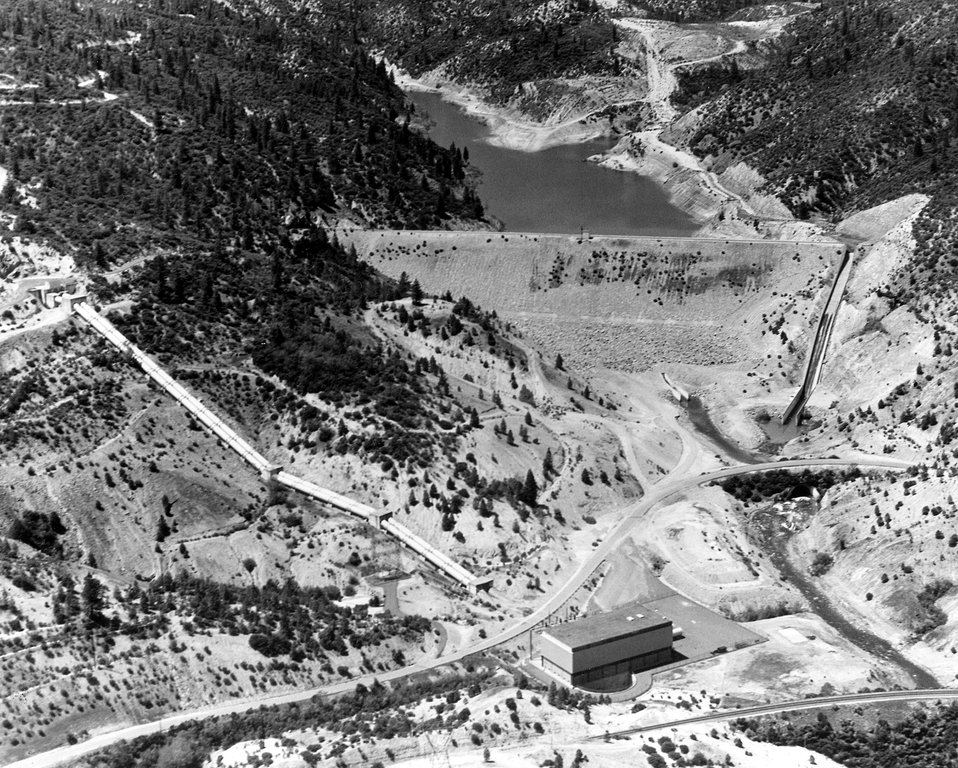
Aerial view looking upstream at Spring Creek Debris Dam and Reservoir near Redding, California. c. 1978